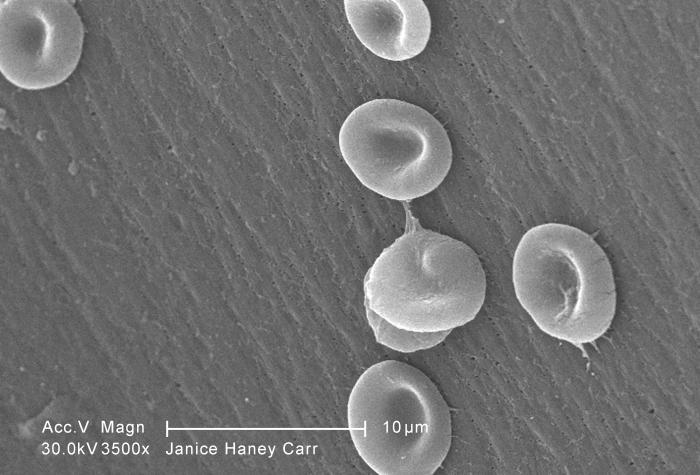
This scanning electron micrograph (SEM) revealed some of the ultrastructural morphology displayed by red blood cells (RBCs) in a blood specimen of a 6 year old male patient that has sickle cell with hereditary persistence of fetal hemoglobin (S-HPFH). In these individuals, the presence of the persistent fetal hemoglogin reduces the severity of the consequences of the sickle cell disease, thereby, reducing the degree of cellular deformity, i.e., sickling, seen in the sickled cells. See PHIL 11694 for a colorized version of this image.